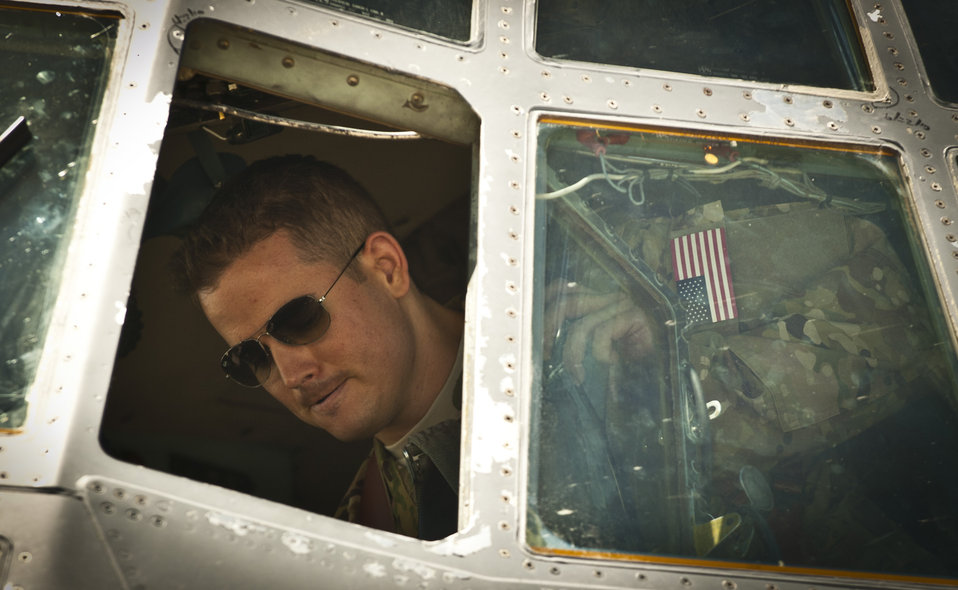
Hercules: A day in the life

Capt. Matt Mansell conducts a preflight check on his C-130H Hercules before a flight at Bagram Airfield, Afghanistan, June 2, 2012. Mansell is a pilot with the 774th Expeditionary Airlift Squadron.